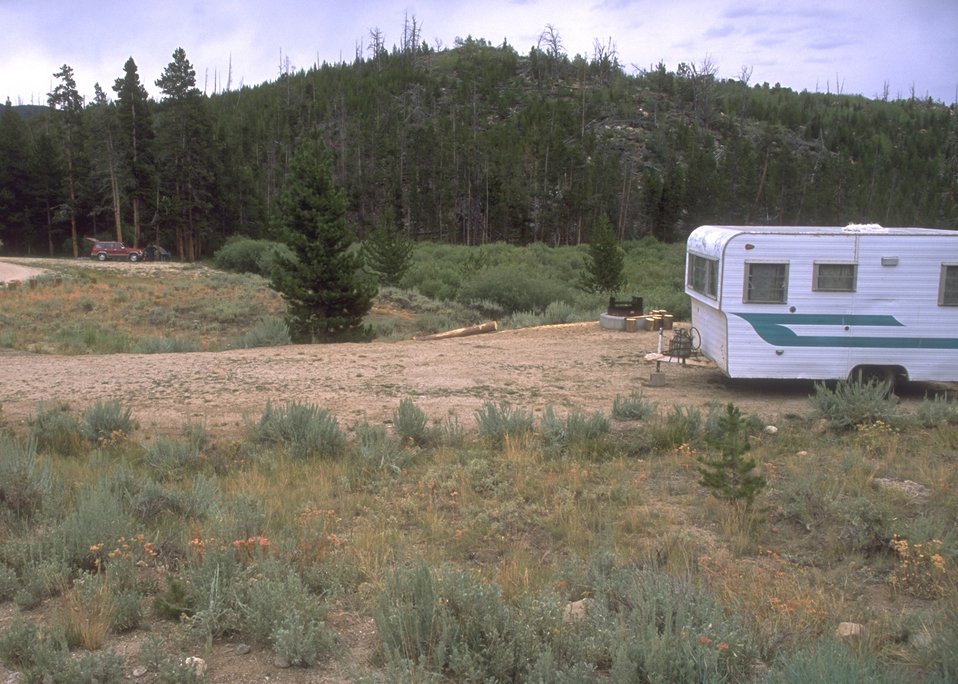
Sweetwater Campground, Rock Springs Field Office.